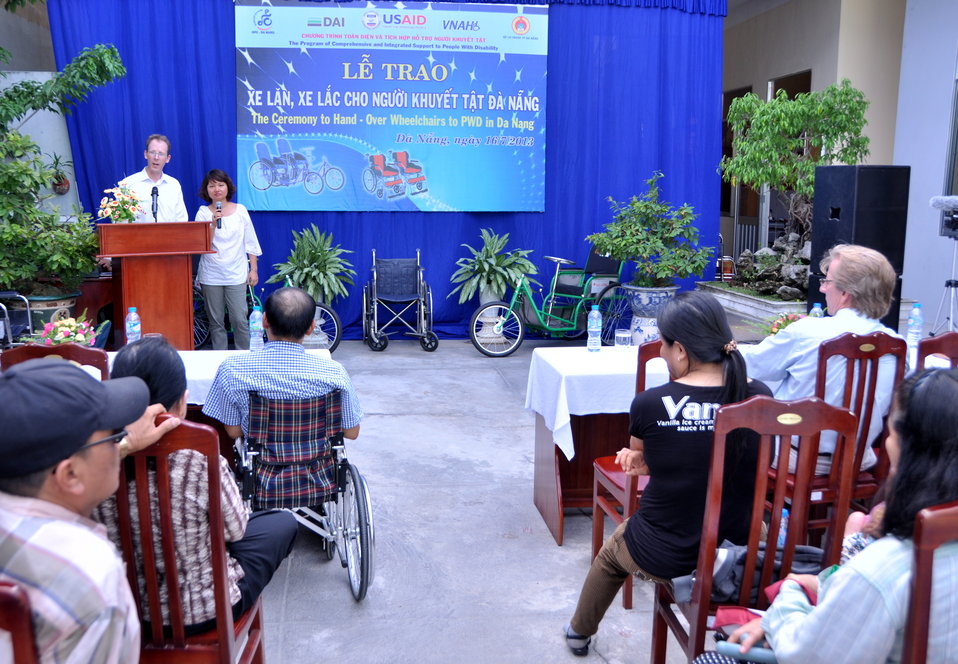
USAID Project Supports Rehabilitation Department for Children and Wheelchair Distribution in Danang

Beneficiaries in Danang, Vietnam, receive wheelchairs.